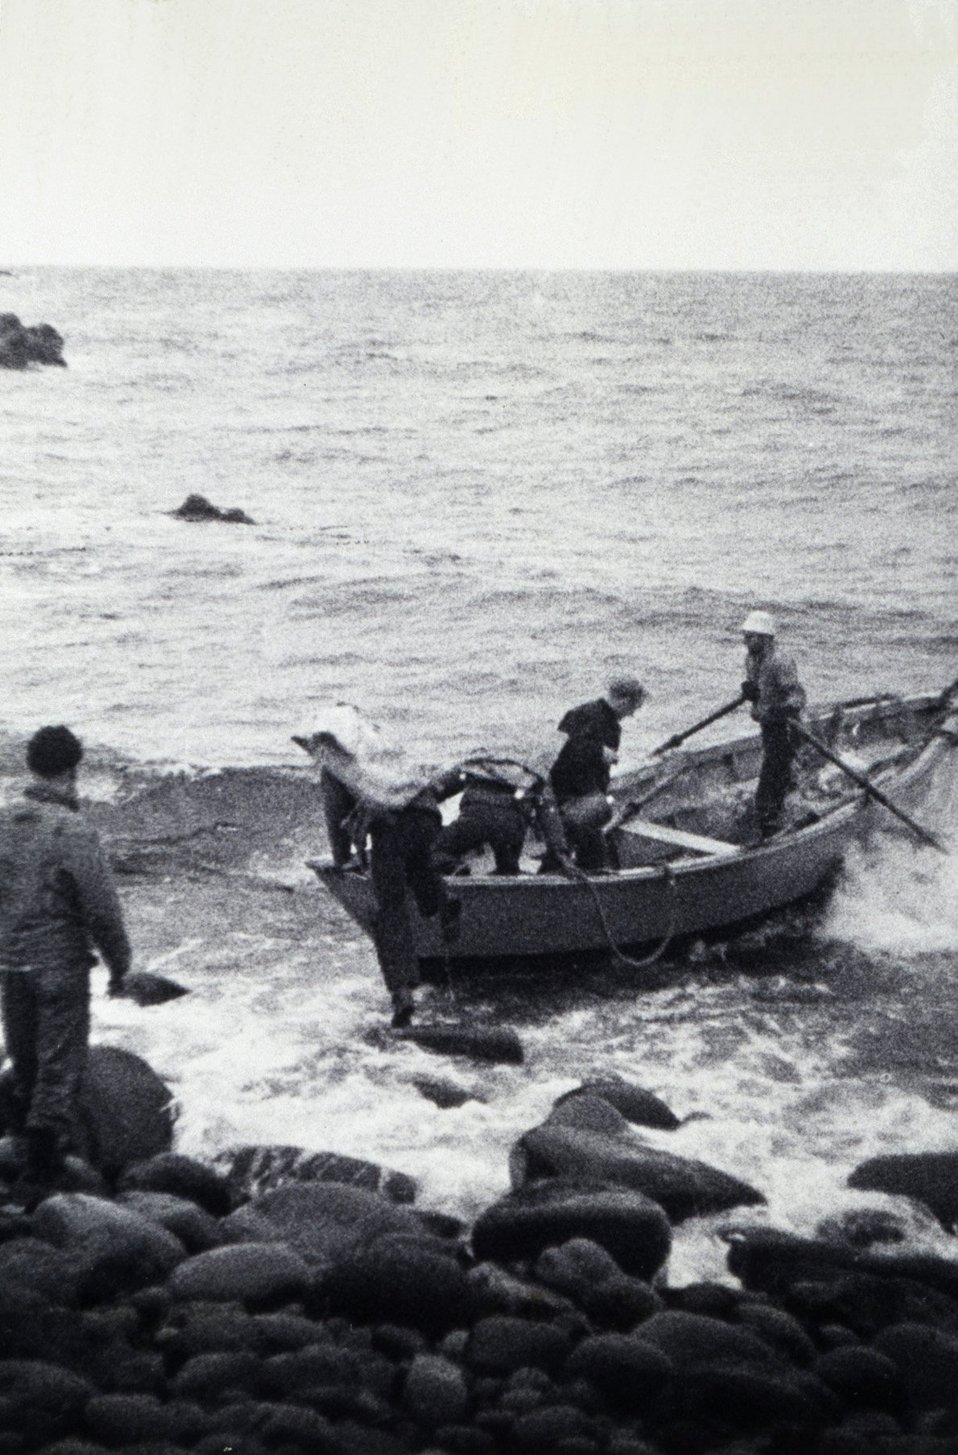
Landing on boulder strewn beach. Under oars - a lost art.